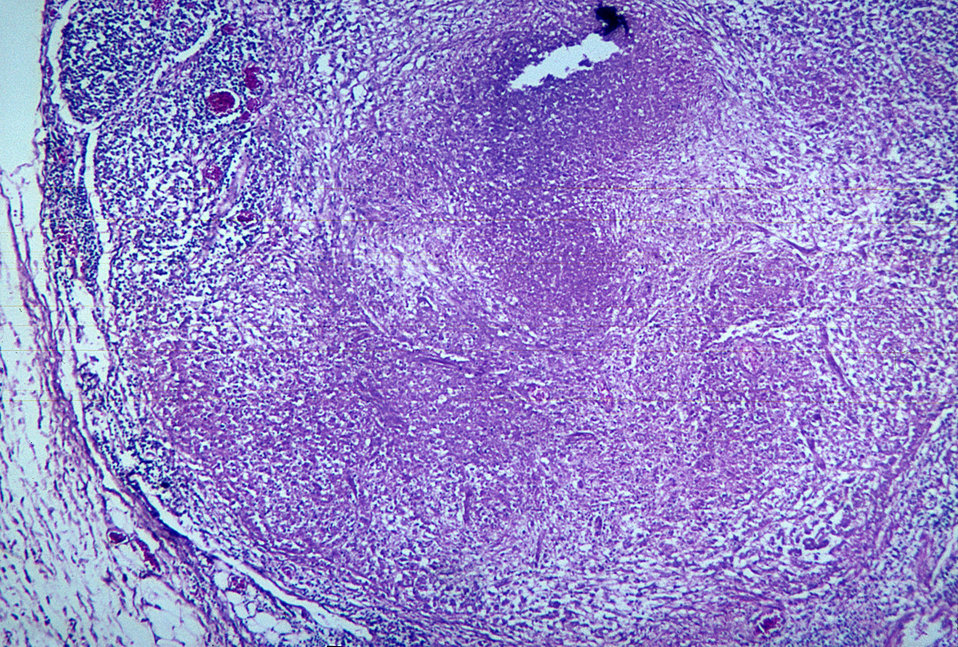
This photomicrograph depicts the histopathologic changes due to nocardiosis of a mesenteric lymph node.